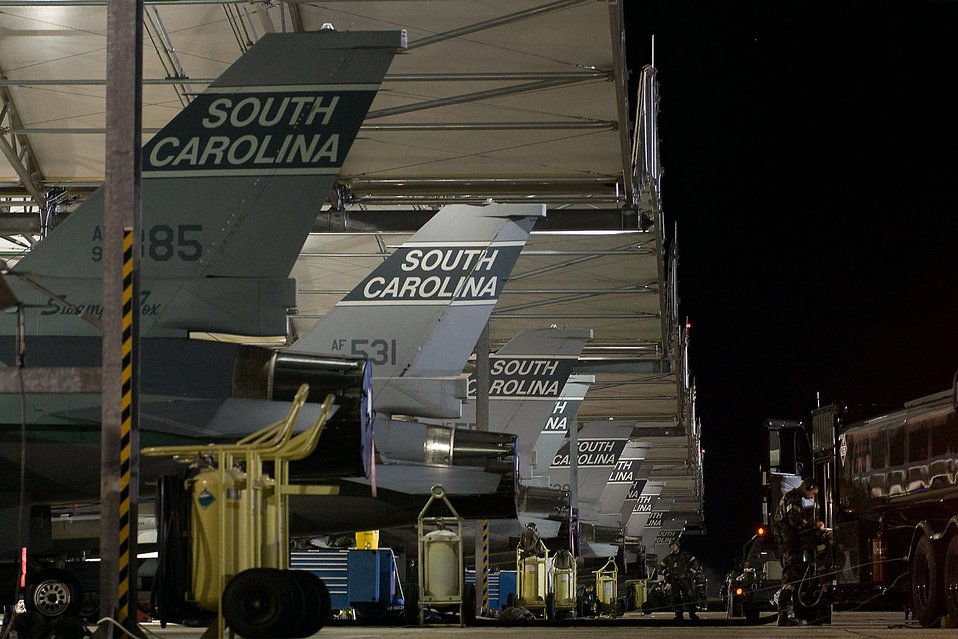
Falcons ready to launch

Maintenance people work on F-16 Fighting Falcons Oct. 3 at McEntire Joint National Guard Base, S.C. Airmen at the 169th Fighter Wing are involved in an operation readiness exercise and are being evaluated on their ability to launch missions in a chemical environment.